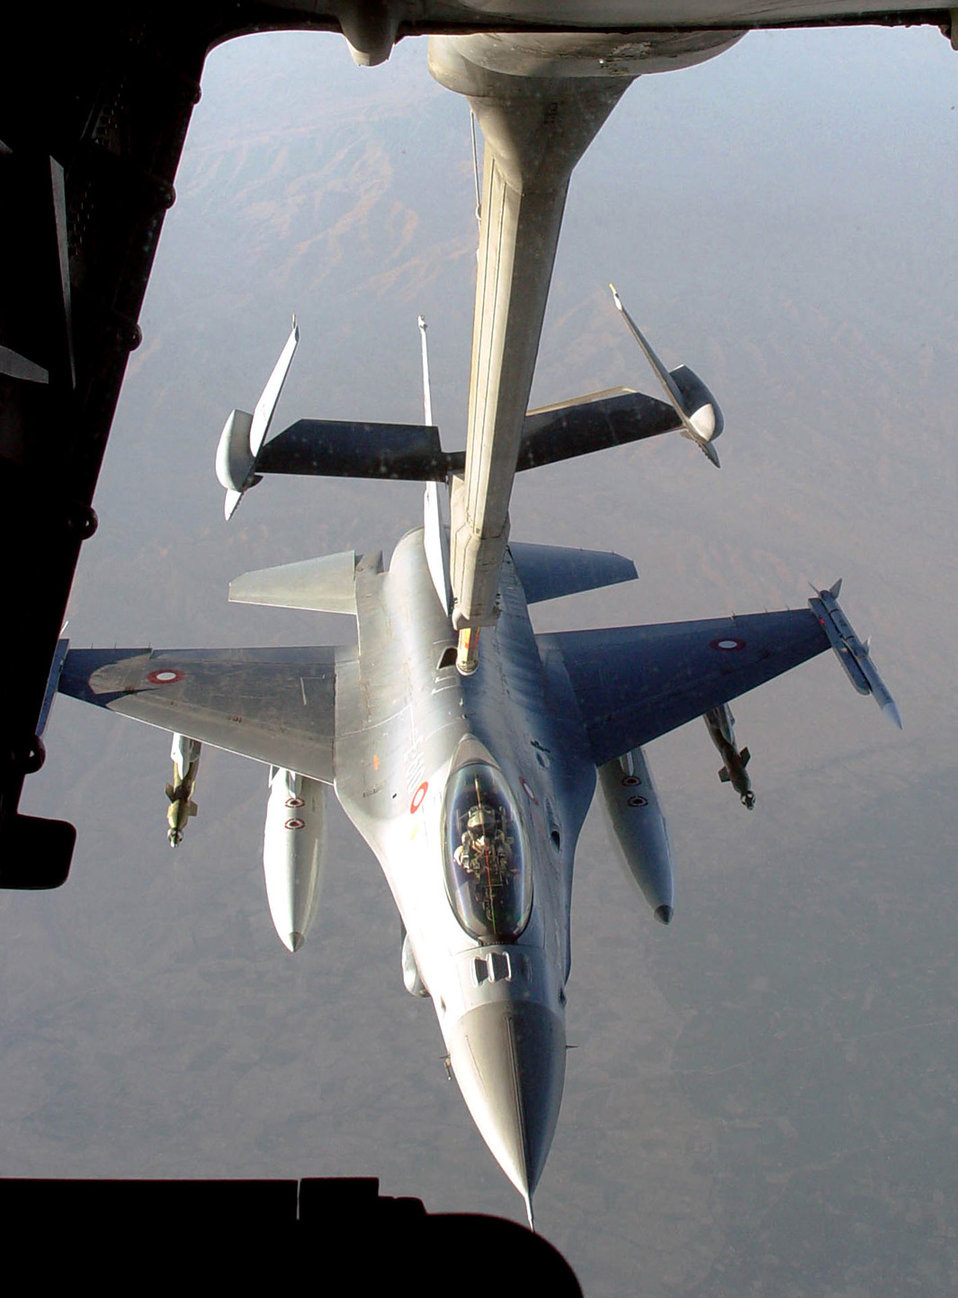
Fueling friends

OPERATION ENDURING FREEDOM -- A KC-10 Extender from the 380th Air Expeditionary Wing refuels a Danish air force F-16 Fighting Falcon over Afghanistan.